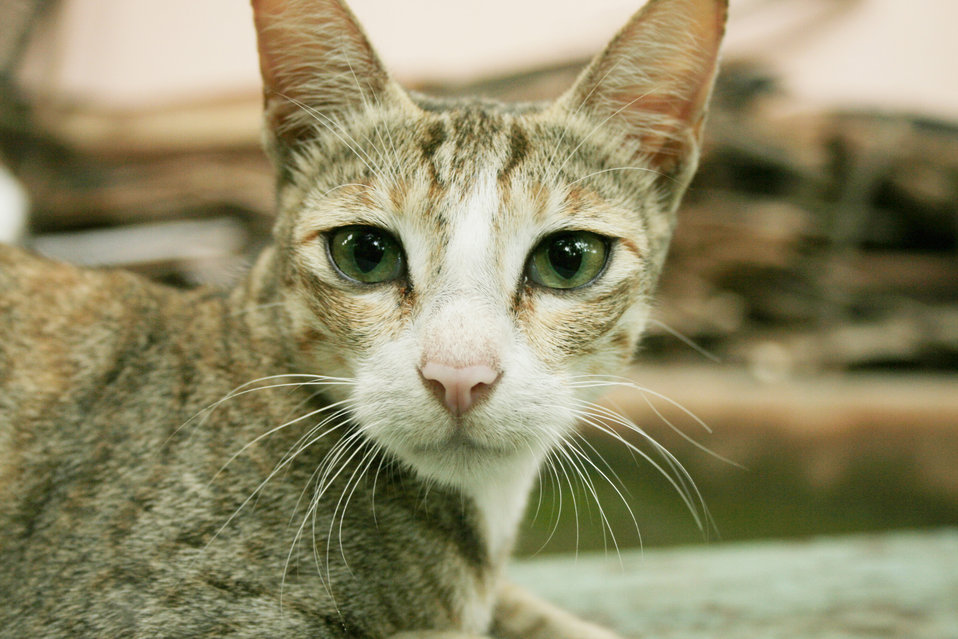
This work is dedicated to Public Domain